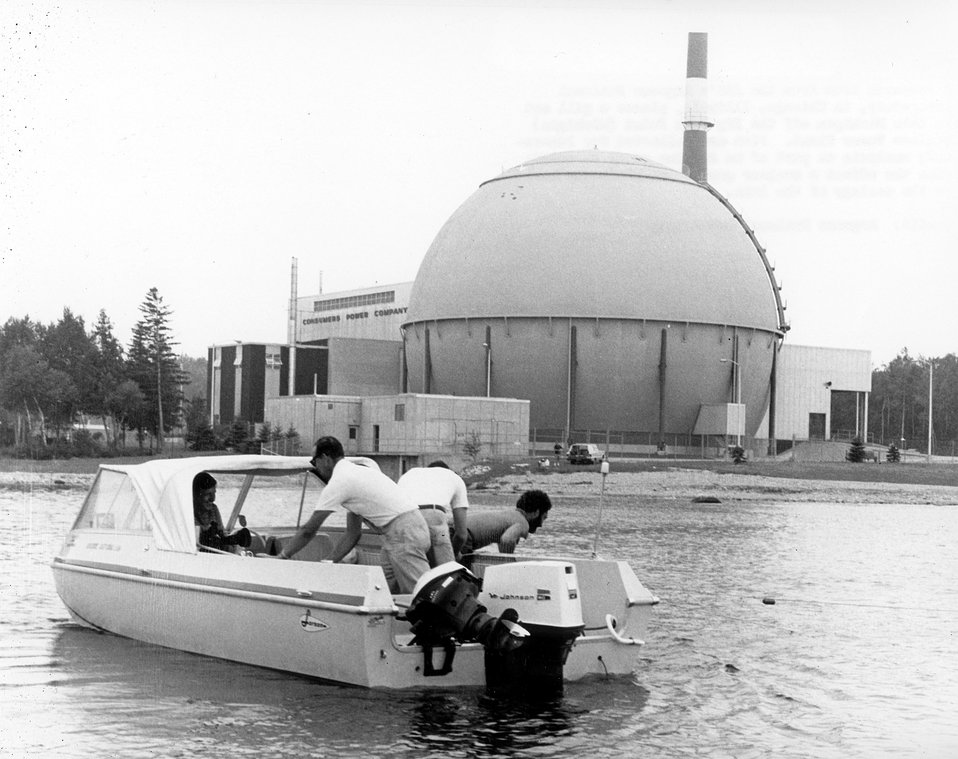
A research team from Argonne places a gill net in Lake Michigan off the Big Rock Point Nuclear Power Plant. c.1970